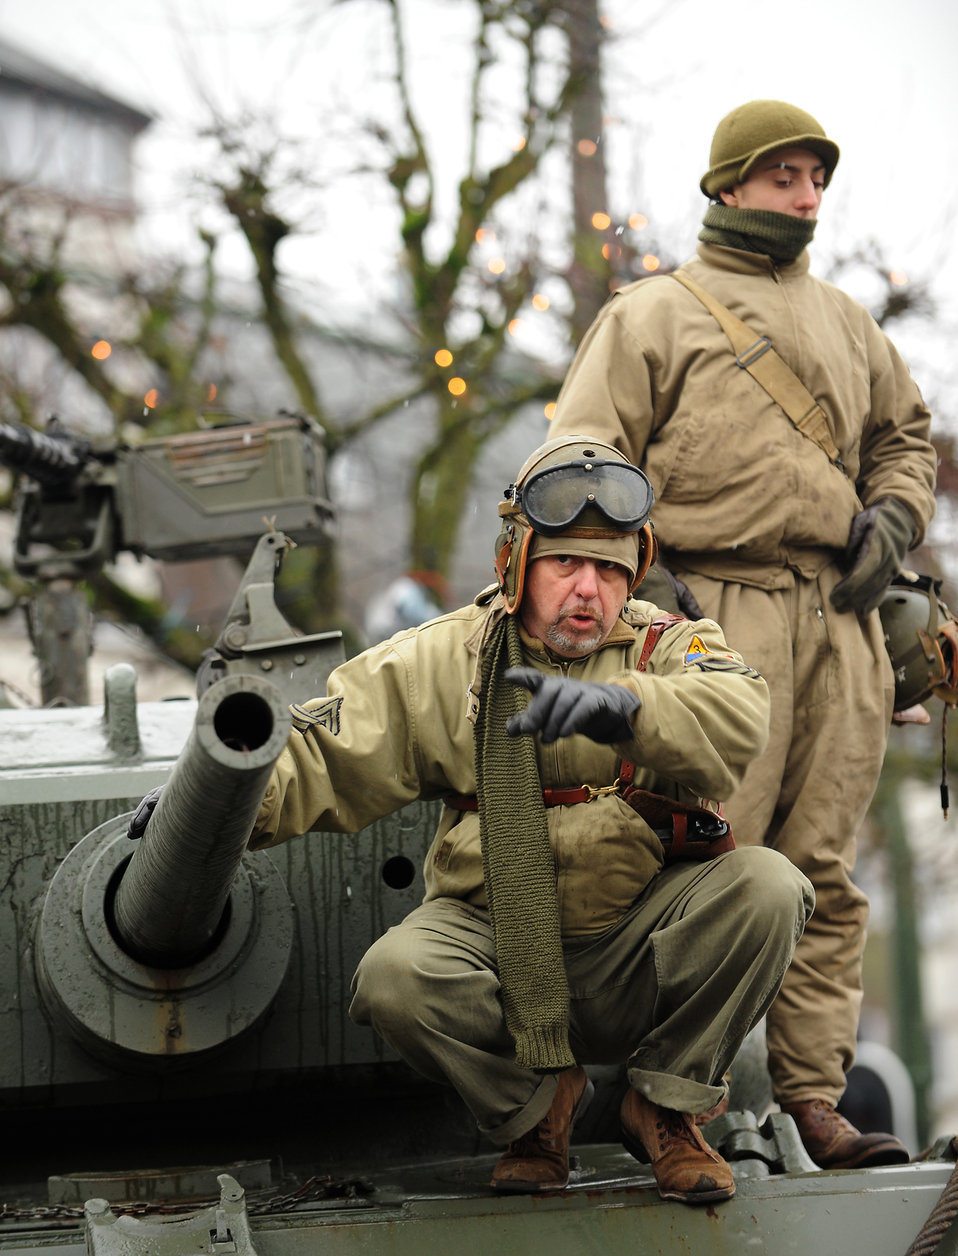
Airmen participate in 32nd Annual Bastogne Historic Walk

World War II re-enactors talk with spectactors Dec. 12, 2009, in Bastogne, Belguim. More than 4,500 people came to Bastogne to commemorate the 65th anniversary of the Battle of the Bulge.